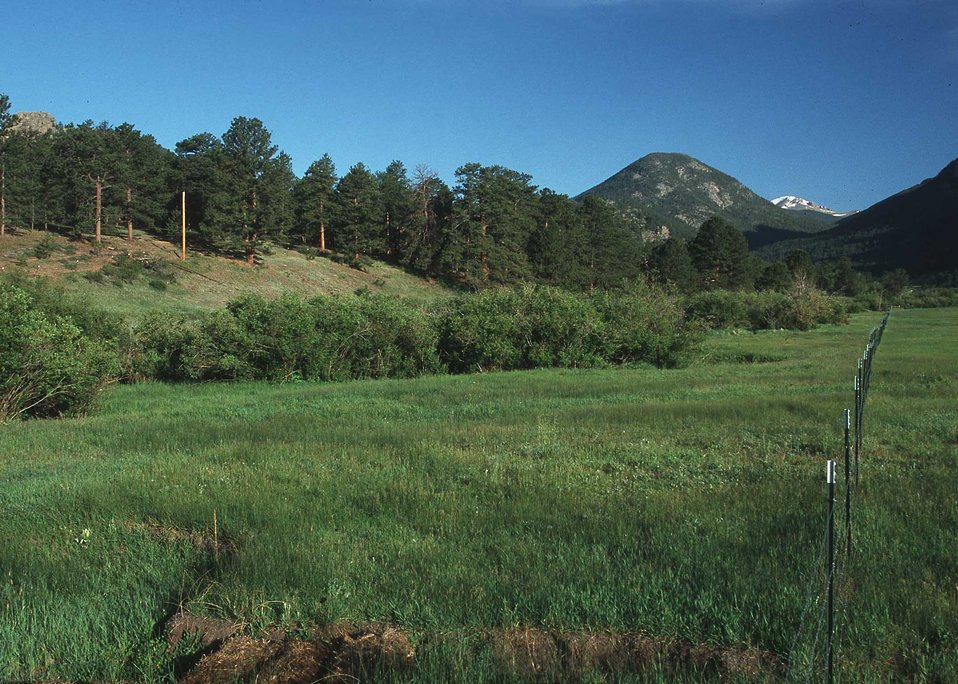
Riparian Pasture-Spanish Peaks area, CO.